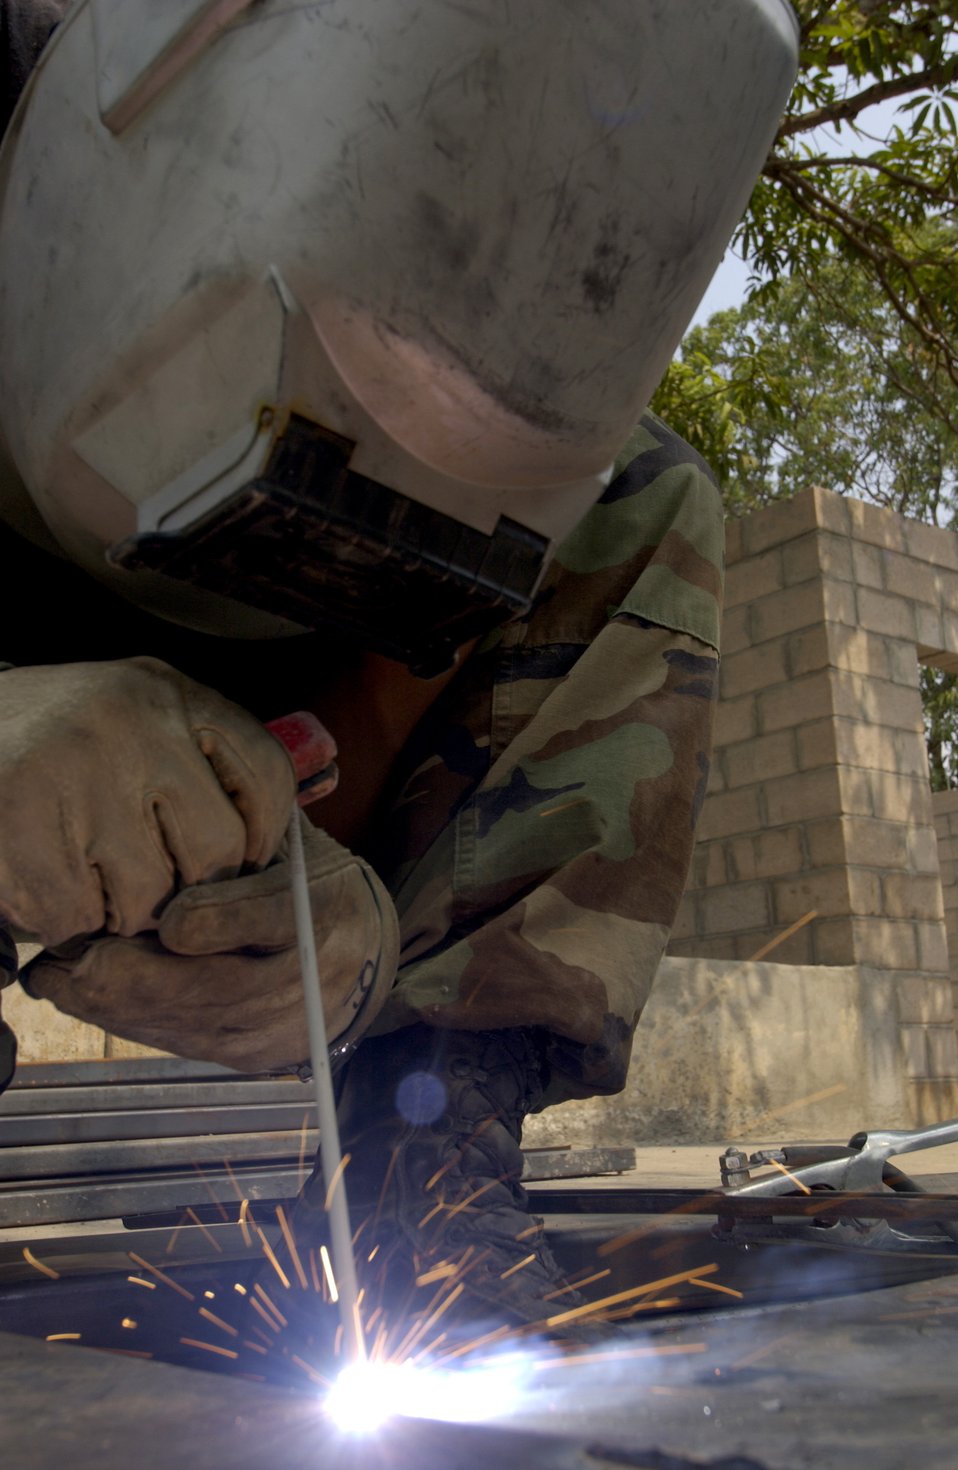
Clinical welding

SAN VICENTE, EL Salvador -- Airman 1st Class Christopher McDonald welds roof trusses at a clinic here April 21. The clinic is one of the New Horizons exercise projects that will build two new schools and three clinics in areas that were hit by earthquakes. Airman McDonald is assigned to the 28th Civil Engineer Squadron at Ellsworth Air Force Base, S.D.